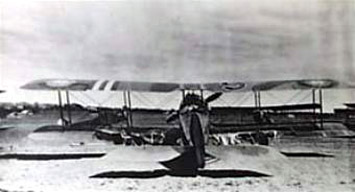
St. Mihiel Offensive - Salmson 2A-2

A Salmson 2A-2, an example of the aircraft used by the American armada for the St. Mihiel offensive.